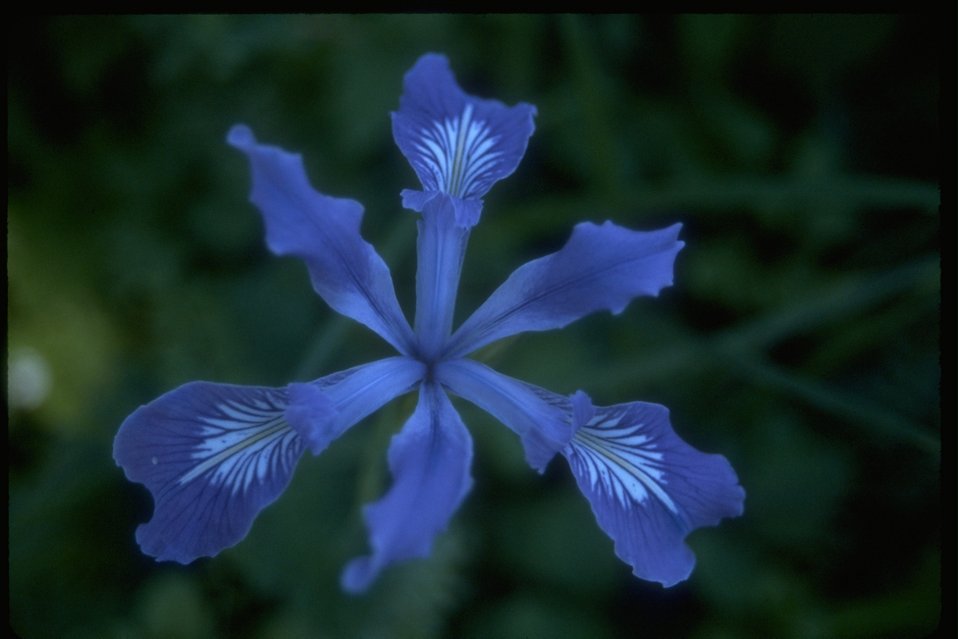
A Wild Iris, Iris missouriensis, found along the North Umpqua Trail.